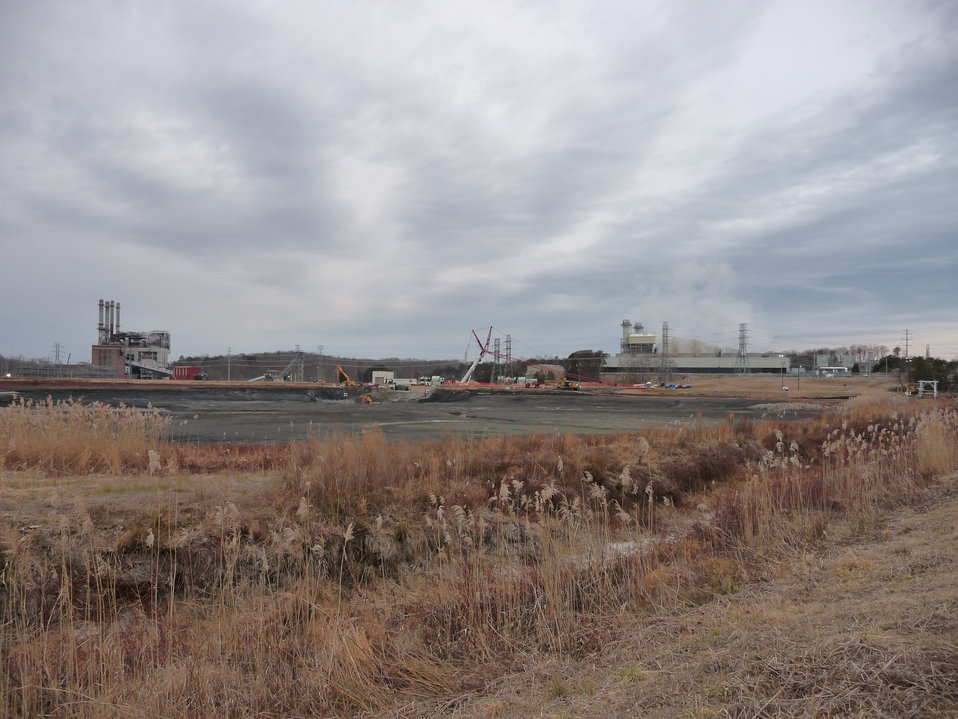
Site and Ash Basin

On February 2, between 50,000 and 82,000 tons of coal ash and 27 million gallons of ash pond
water waste were released at Duke Energy’s Dan River Steam Station (pictured above) north of
Eden, N.C.